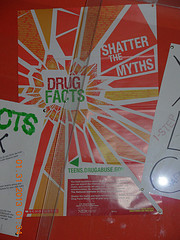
Iowa's SAFE Coalition, NDFW 2013

Van Buren County, IA. SAFE Coalition high school student run groups fighting issues of drug, alcohol, and tobacco abuse during NDFW 2013.